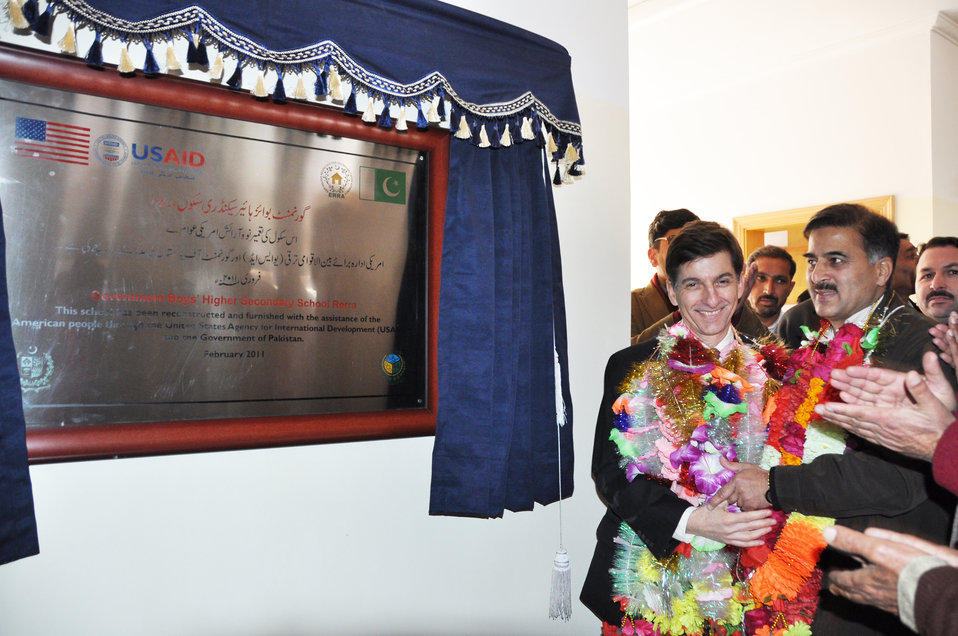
Government Boys’ Higher Secondary School Rera

Bagh, February 24, 2011 - USAID/Pakistan Mission Director Andrew Sisson at the inauguration of the Government Boys’ Higher Secondary School Rera. The building was heavily damaged during the 2005 earthquake. Now the school has been reconstructed and furnished with assistance from the U.S. Agency for International Development and the Government of Pakistan.